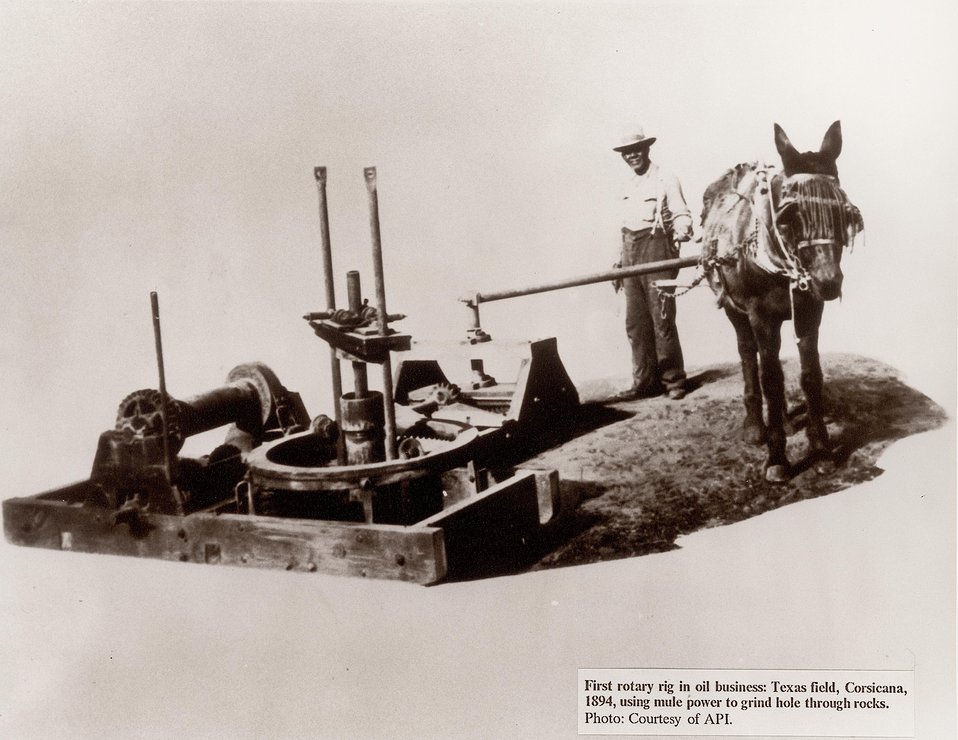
First rotary rig in oil business: Texas field, Corsicana. 1894, using mule-power to grind hole through rocks.